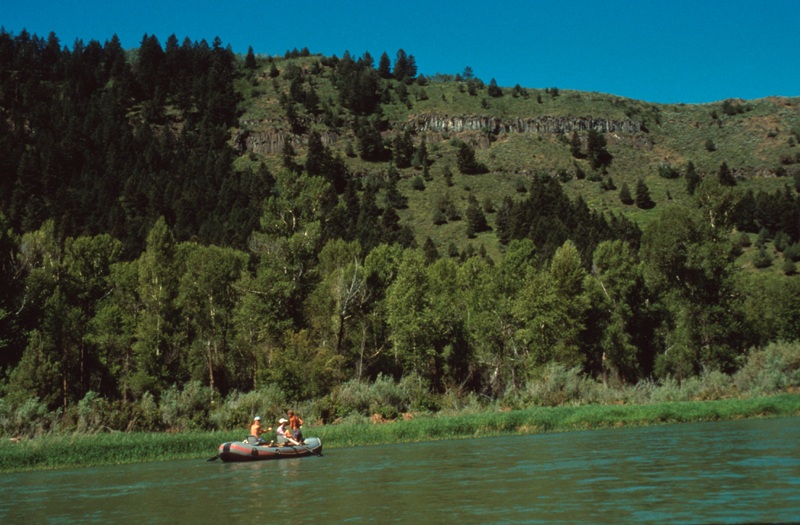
South Fork of the Snake River